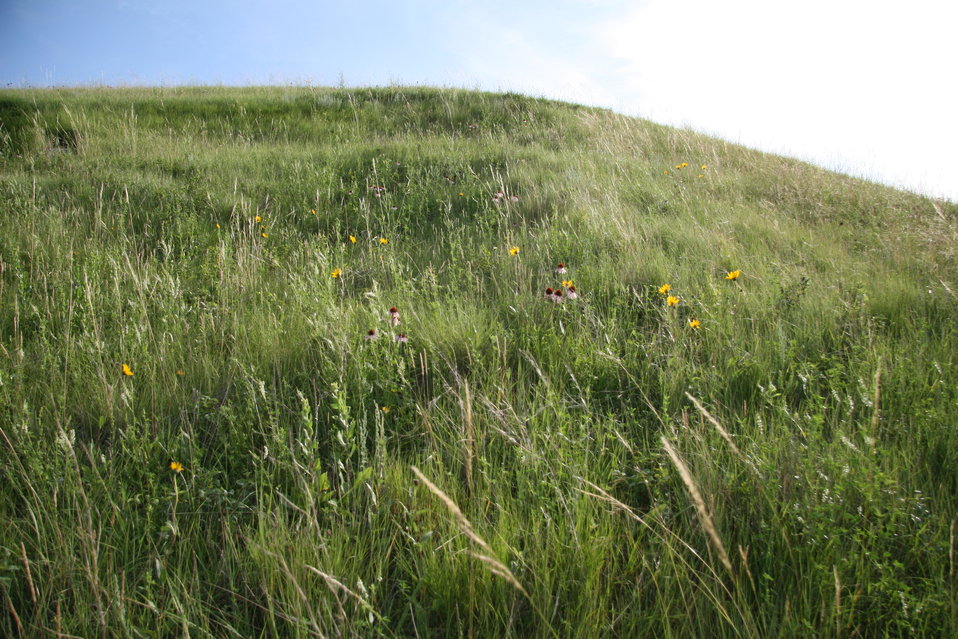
Prairie

Beautiful prairie at Des Lacs National Wildlife Refuge in North Dakota.